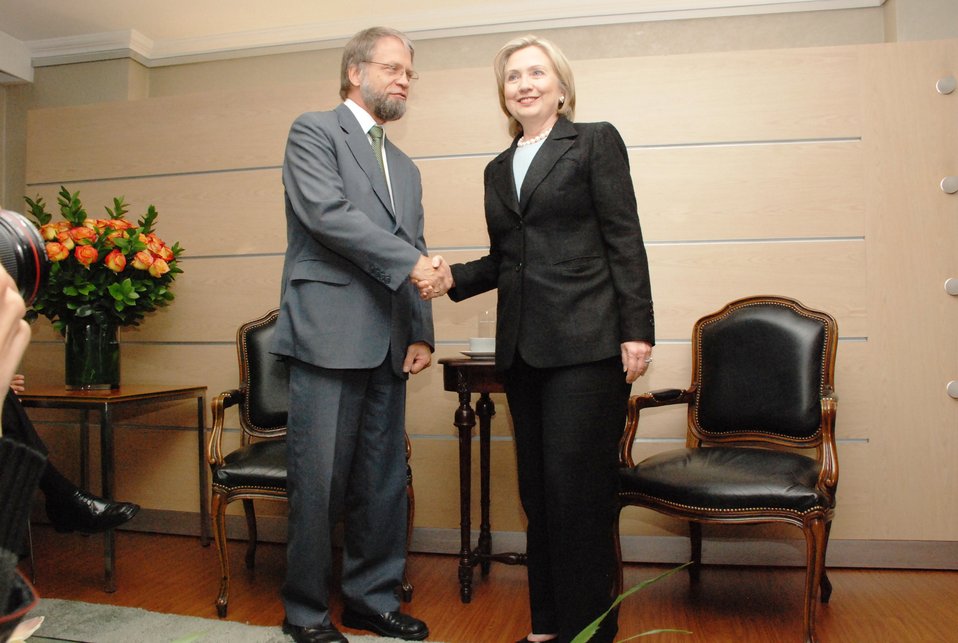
Secretary Clinton Shakes Hands With Colombian Presidential Candidate Antanas Mockus

U.S. Secretary of State Hillary Rodham Clinton shakes hands with Colombian Presidential Candidate Antanas Mockus to discuss issues of bilateral interest at the Hotel Charleston in Bogotá, Colombia, on June 9, 2010.